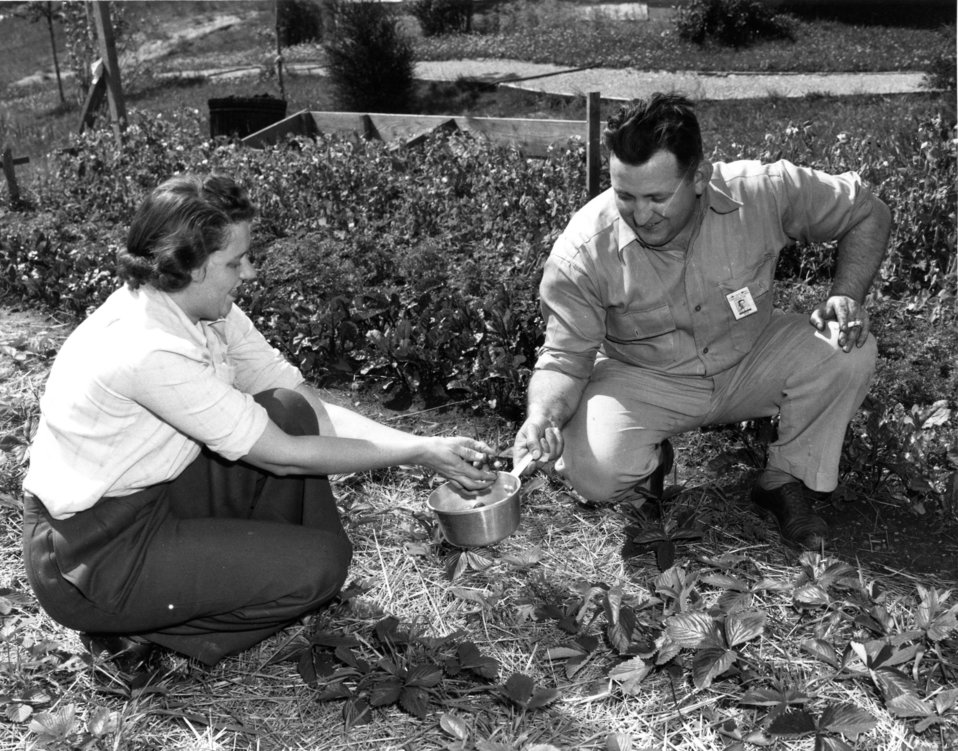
Daily Life at Oak Ridge